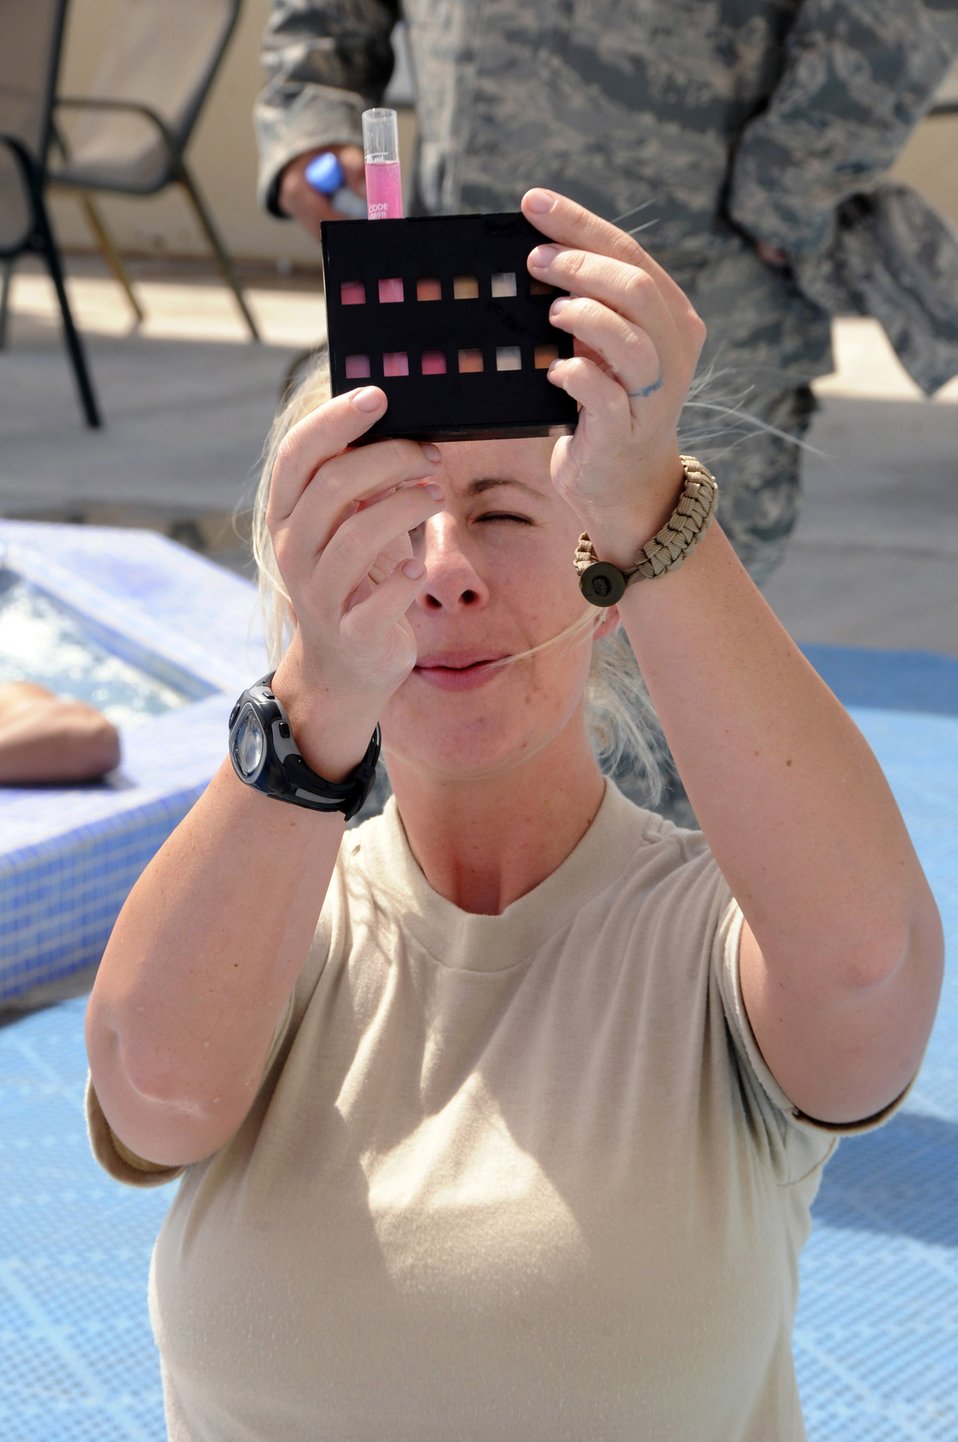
Base BEEs keep mission buzzing

Staff Sgt. Ashlie Steele, a 379th Expeditionary Medical Group bioenvironmental engineer at an air base in Southwest Asia, tests the chlorine in a water sample taken from a base pool.